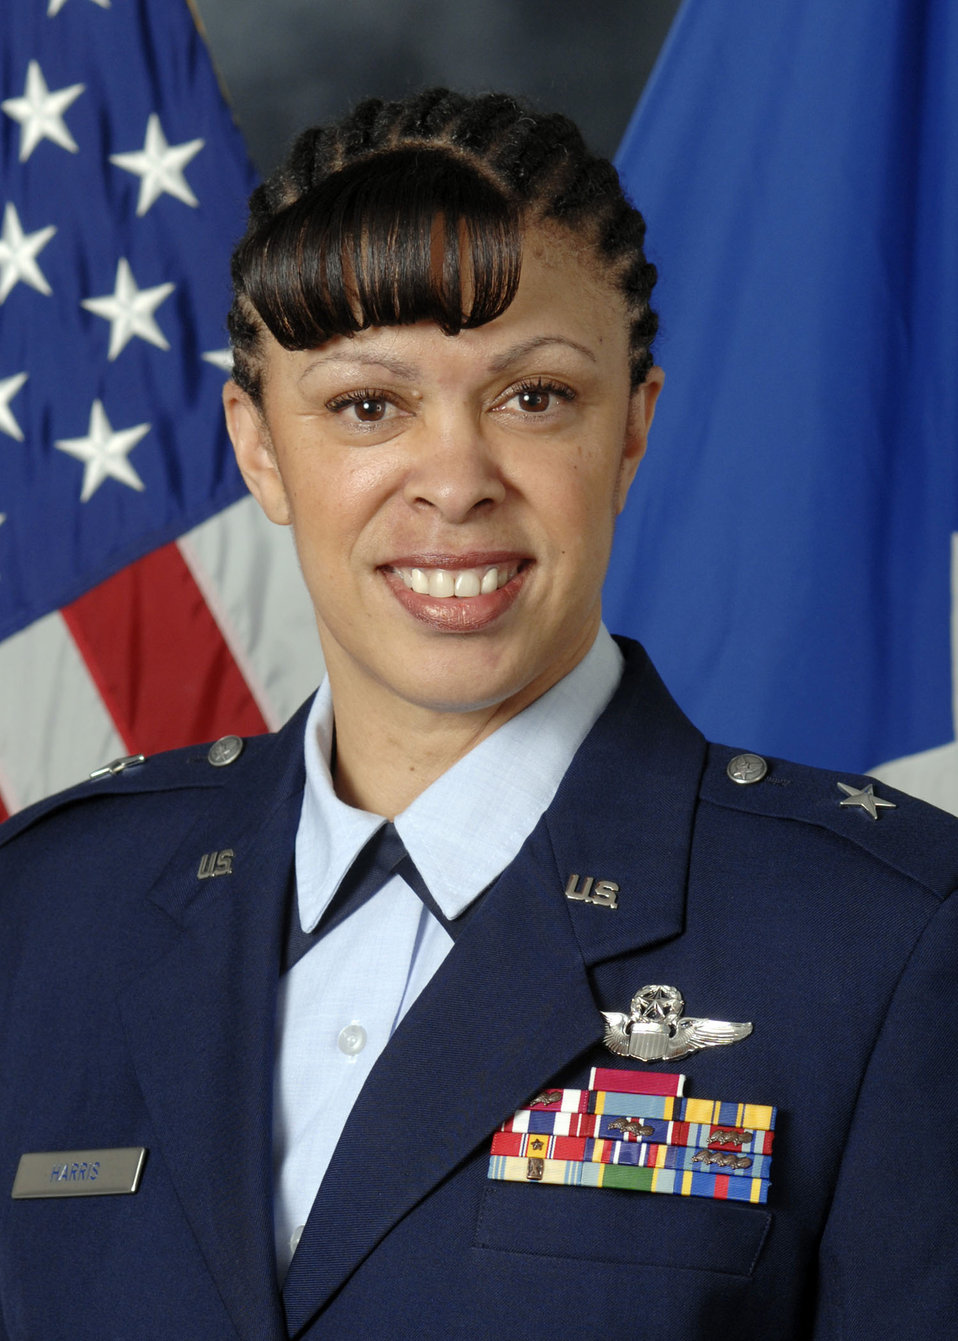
Brig. Gen. Stayce Harris, the Air Force's highest ranking African-American female aviator